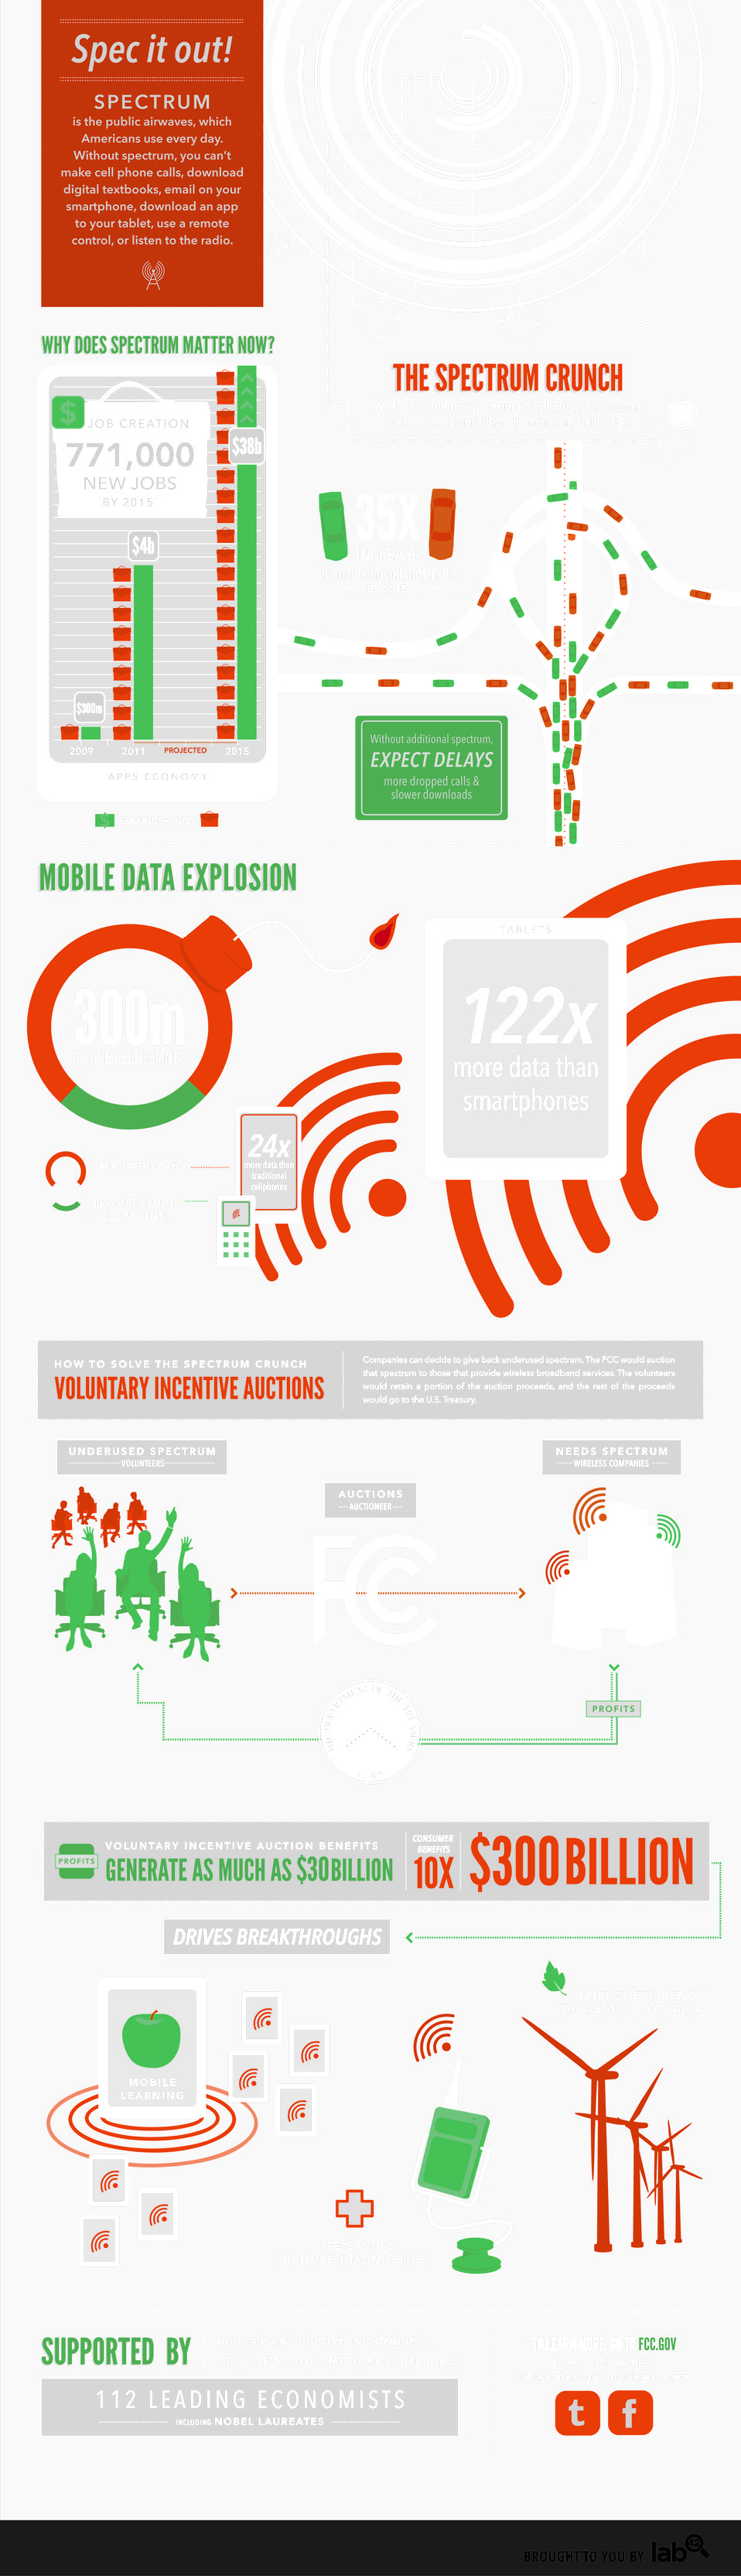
Spectrum

At a speech in October, Chairman Genachowski said, 'The spectrum crunch is the single biggest threat to one of the most promising parts of our economy. There’s much we need to do to free up spectrum for mobile broadband, but the single biggest step is voluntary incentive auctions.'